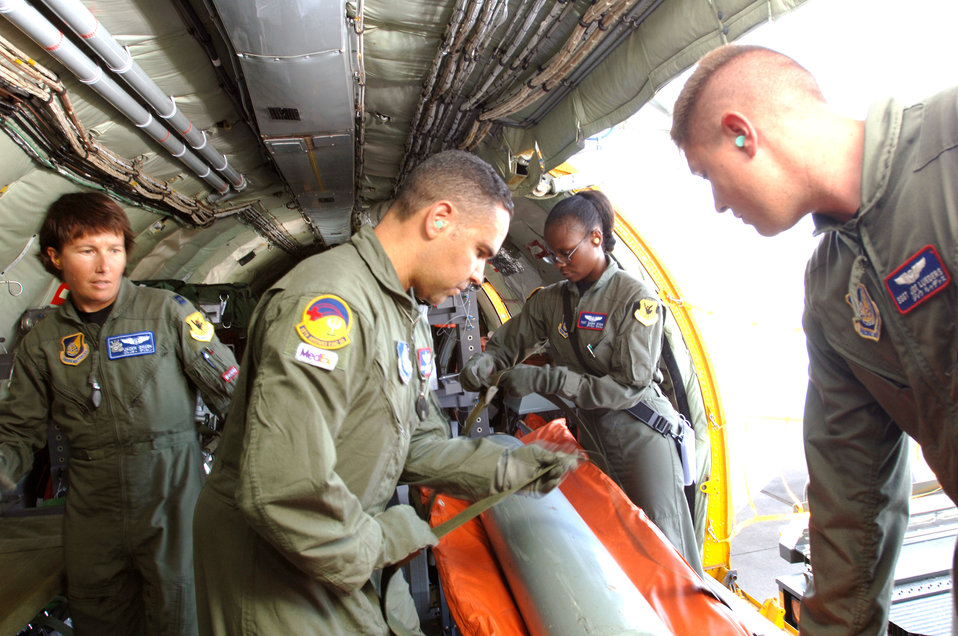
KADENA AIR BASE, Japan -- (From left) Capt. Jackie Dillon, Tech. Sgts. Enrique Ferreira and Dawn Ryan, and Staff Sgt. Joe Lueders set up a patient support pallet inside a KC-135 Stratotanker during a mission here. The Airmen are assigned to the 18th Aeromedical Evacuation Squadron.